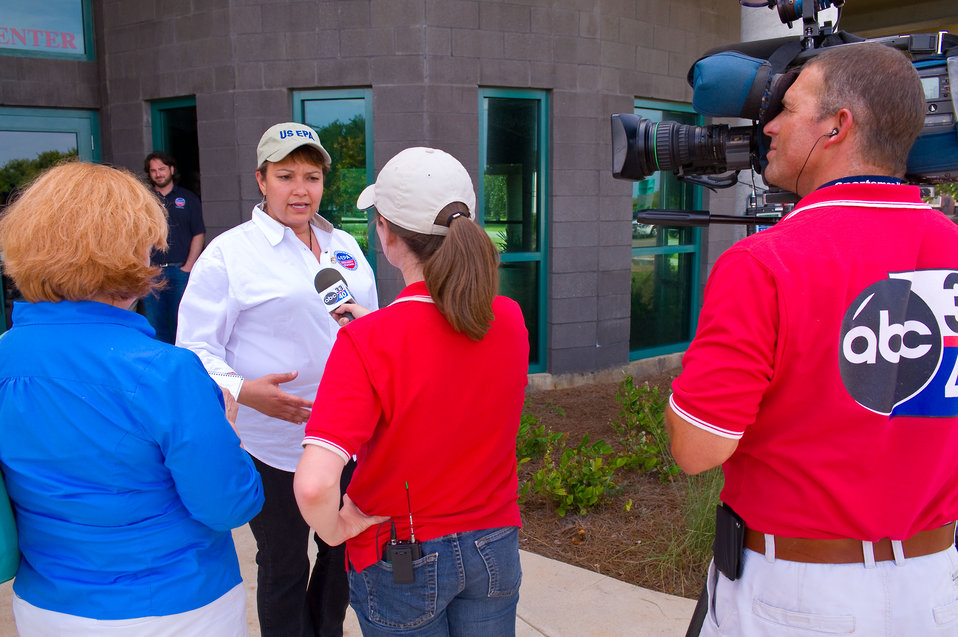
June 3, EPA Administrator Lisa Jackson interviews with ABC News crew